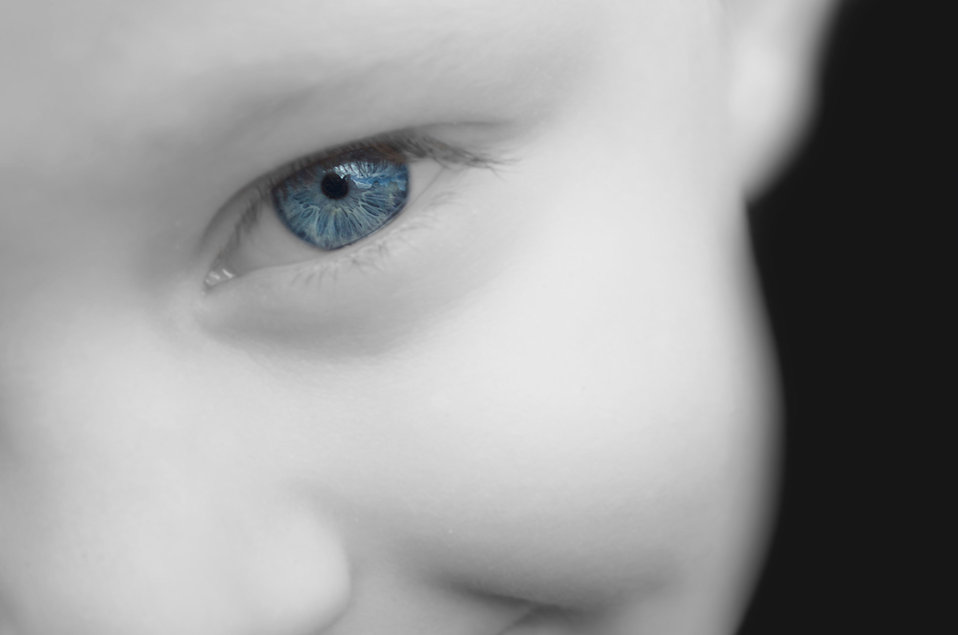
Blue eye - background.